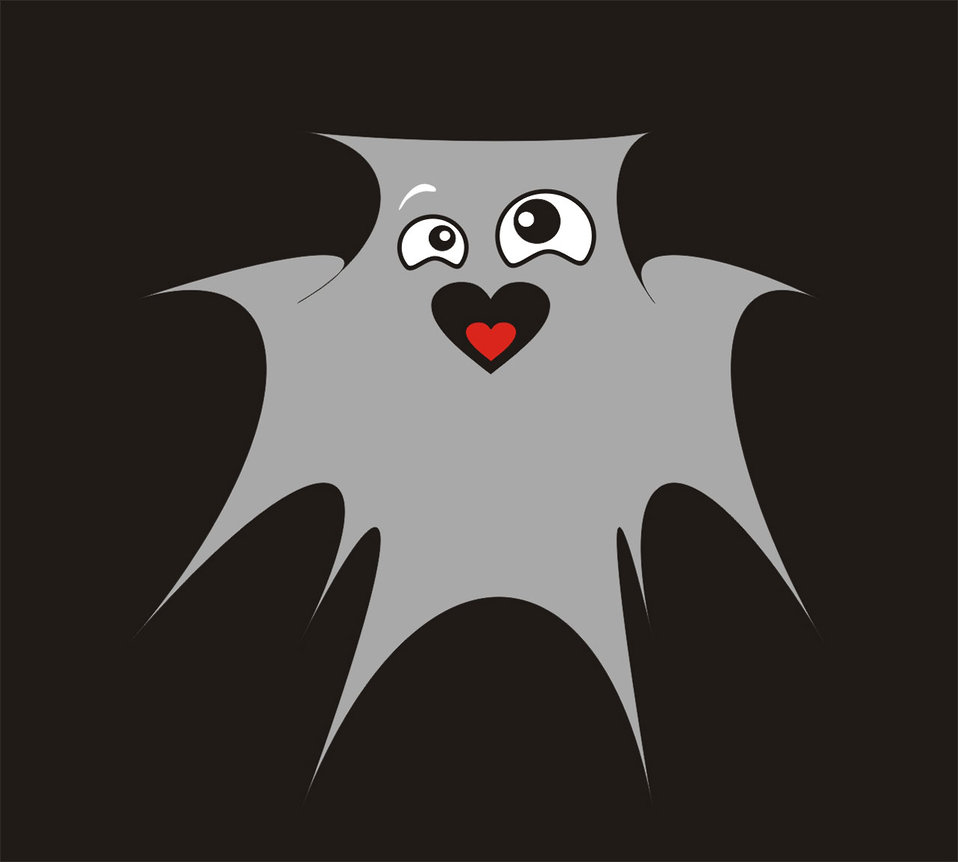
Ghost in love

Illustration of a grey ghost.